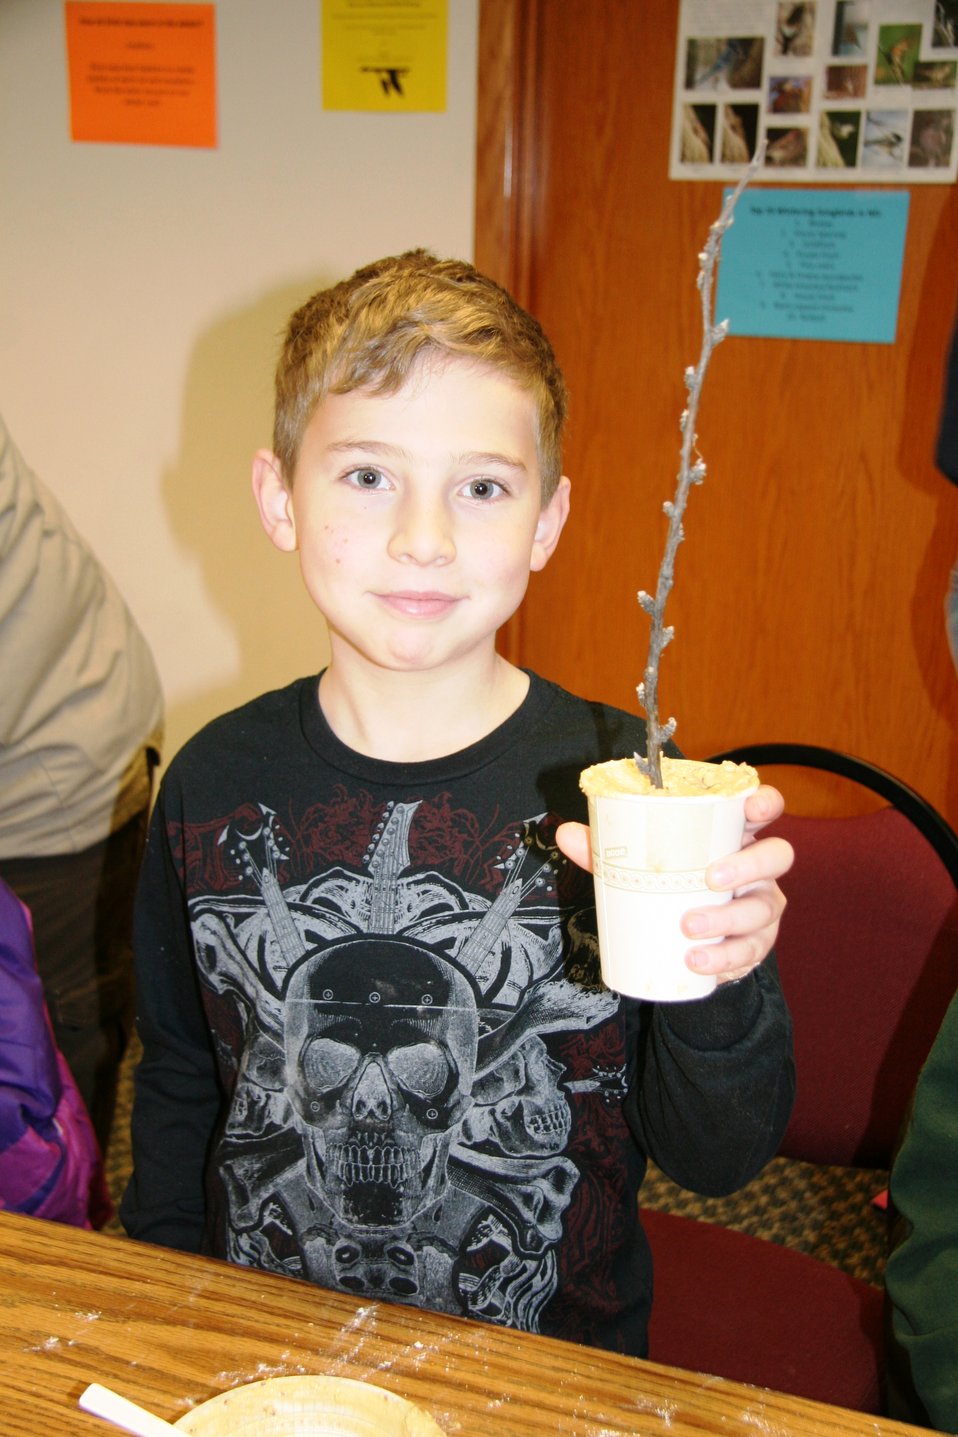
Backyard Bird Feeding

Showing off his bird treat! Great job! Participants learned about simple things they can do in their own backyard to help wildlife and attact birds to feeders.